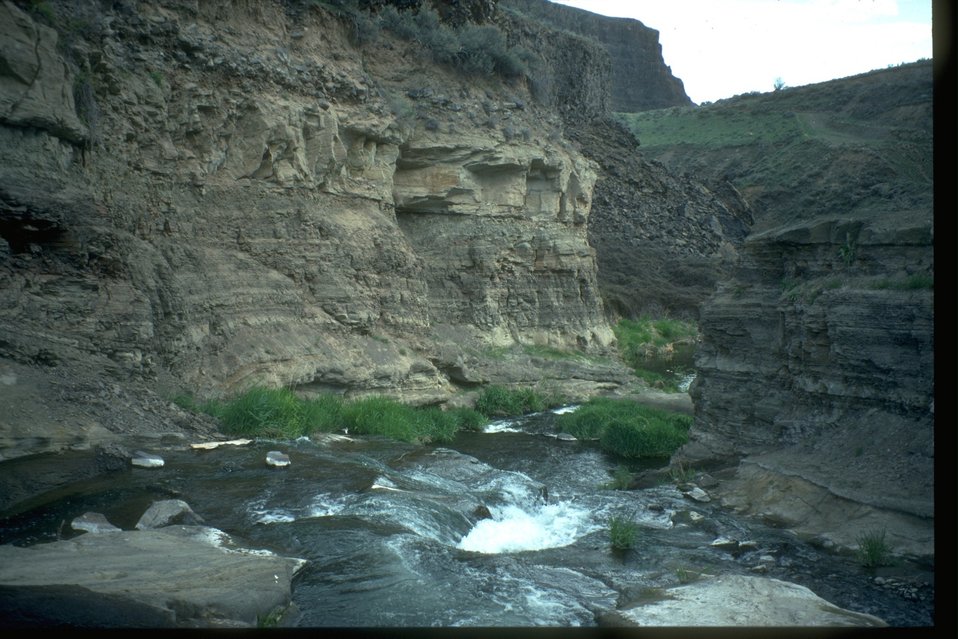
Geological profile along Douglas Creek in Douglas County, WA.